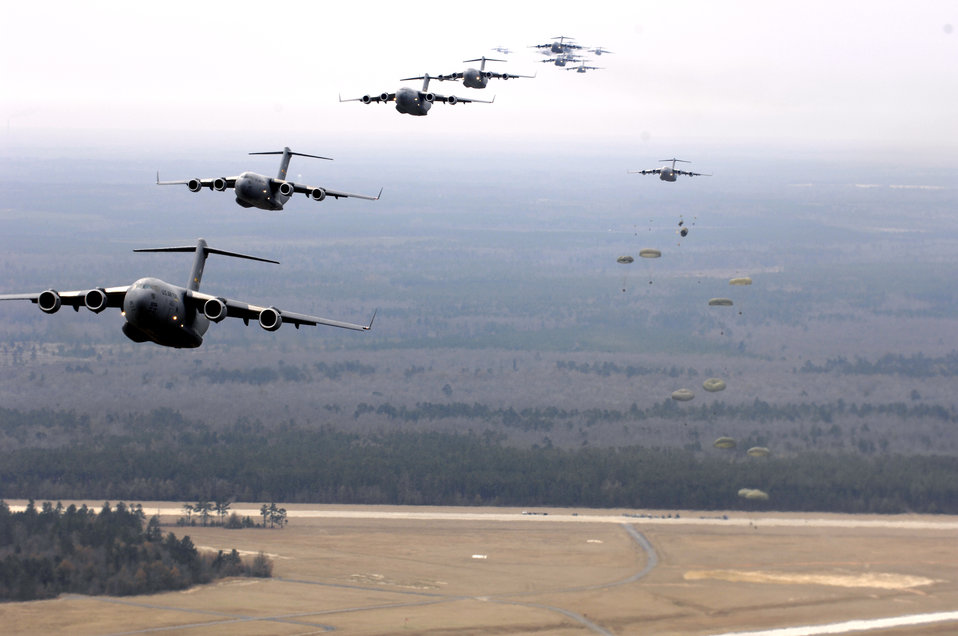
20 Charleston C-17s fill the sky

Several C-17 Globemaster IIIs fly as part of a 20-ship formation Dec. 21 over South Carolina. The C-17s, assigned to the 437th and 315th Airlift Wings at Charleston AFB, were part of the largest formation in history from a single base and demonstrated the strategic airdrop capability of the Air Force.